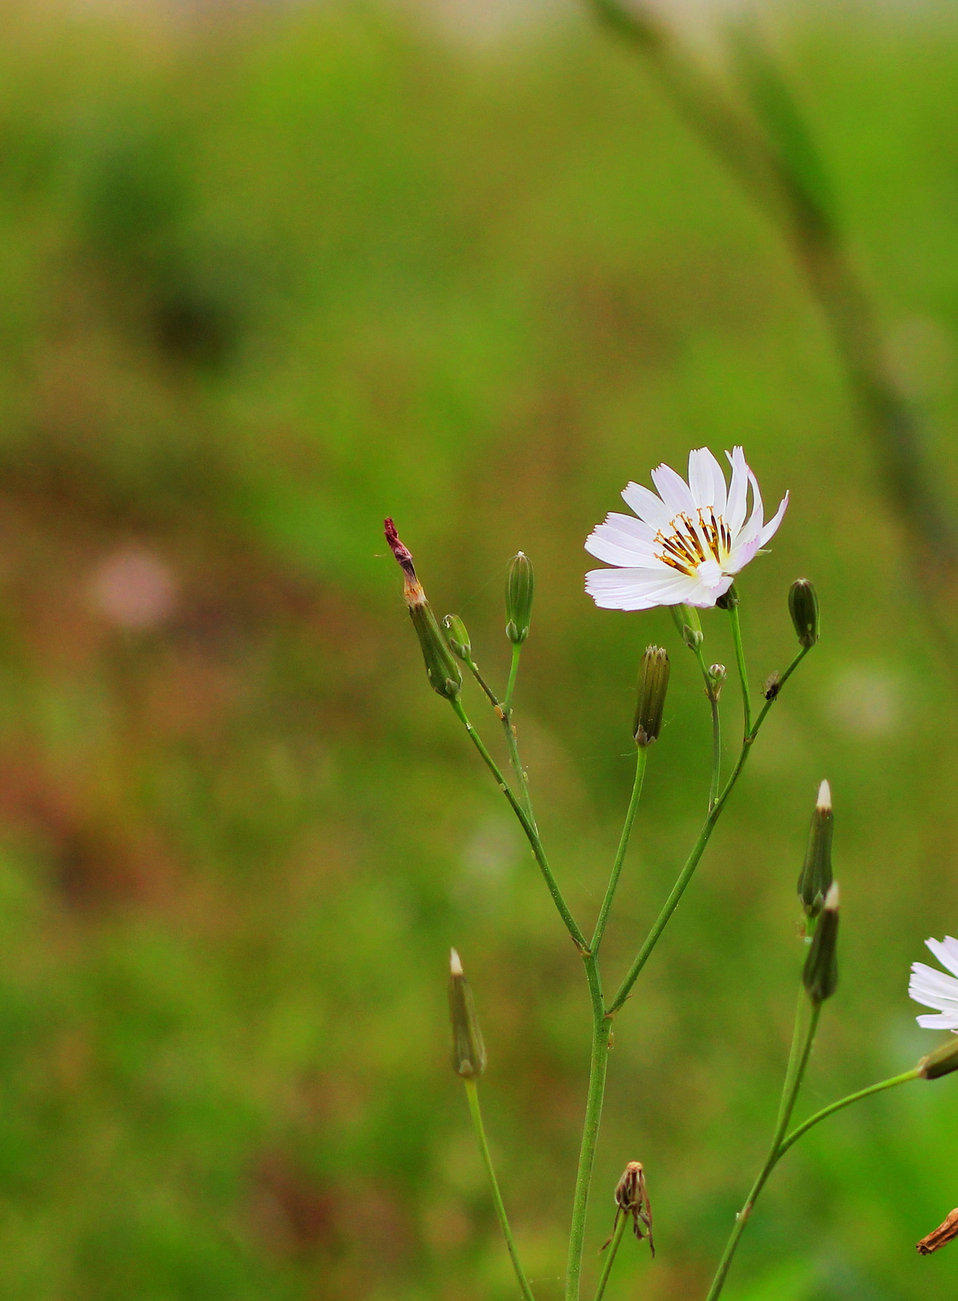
Wildflowers

Hefei lakeside wetland park cosmos, an unmanned cloudy shot.